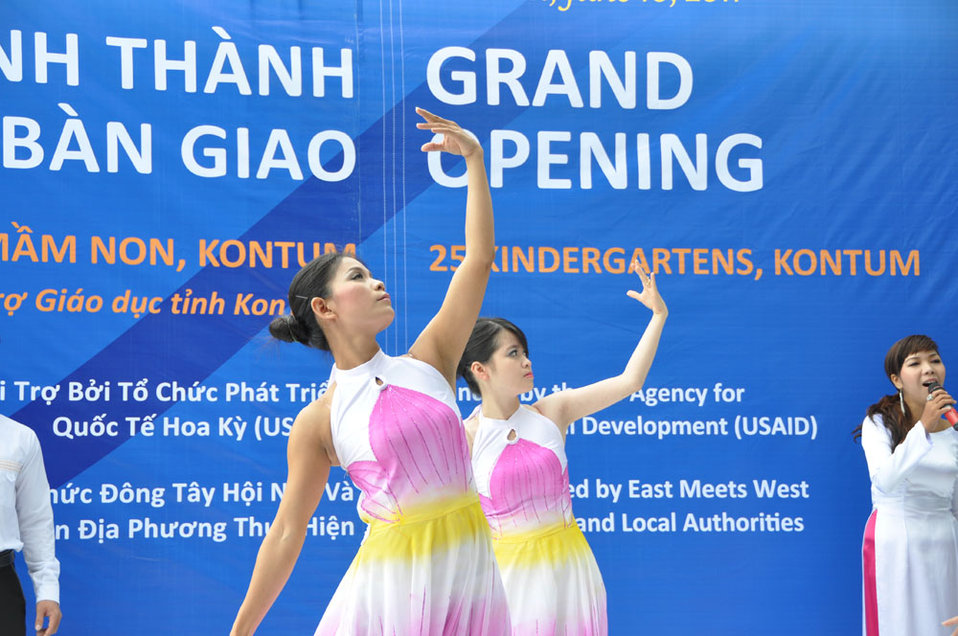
Singers and dancers perform at a kindergarten hand-over ceremony in Kon Tum.